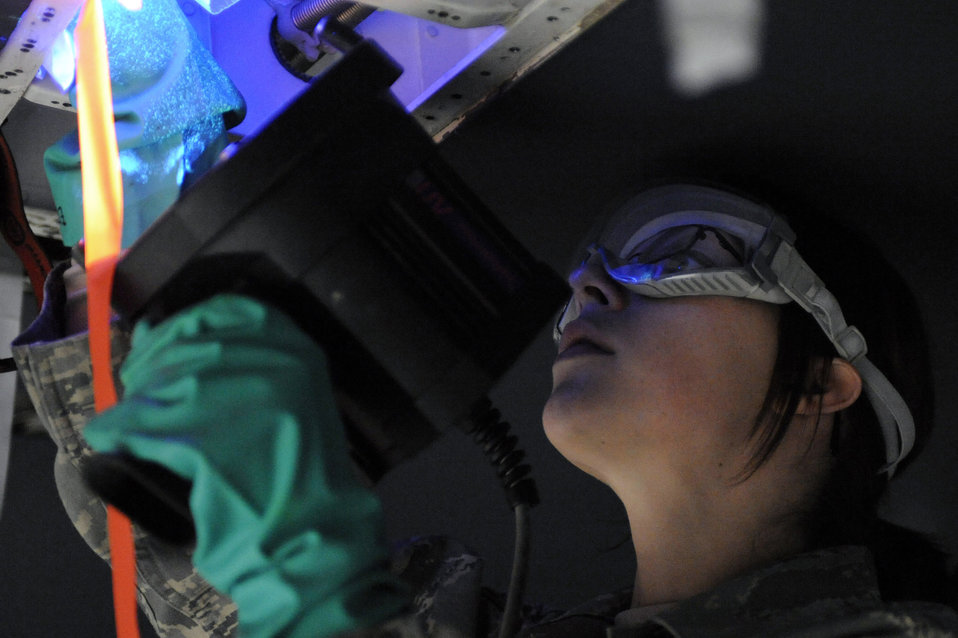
It's illuminating

Senior Airman Jennifer Wolfe uses an ultraviolet black light to detect cracks in a B-1B Lancer April 1 at Ellsworth Air Force Base, S.D. Airman Wolfe is assigned to the 28th Maintenance Squadron as a non-destructive inspector.